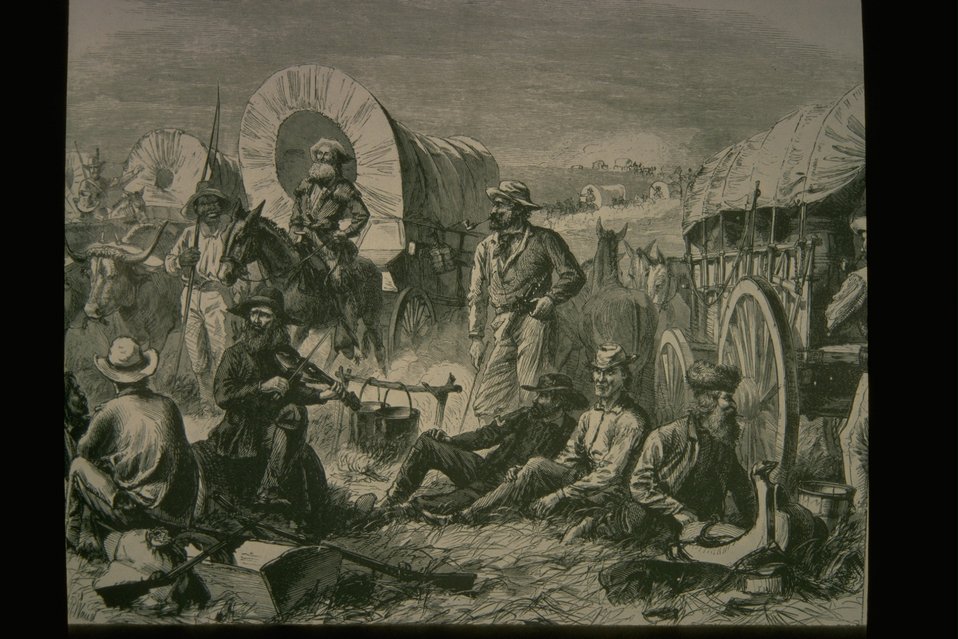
Historic graphic from exhibit at the NHOTIC.